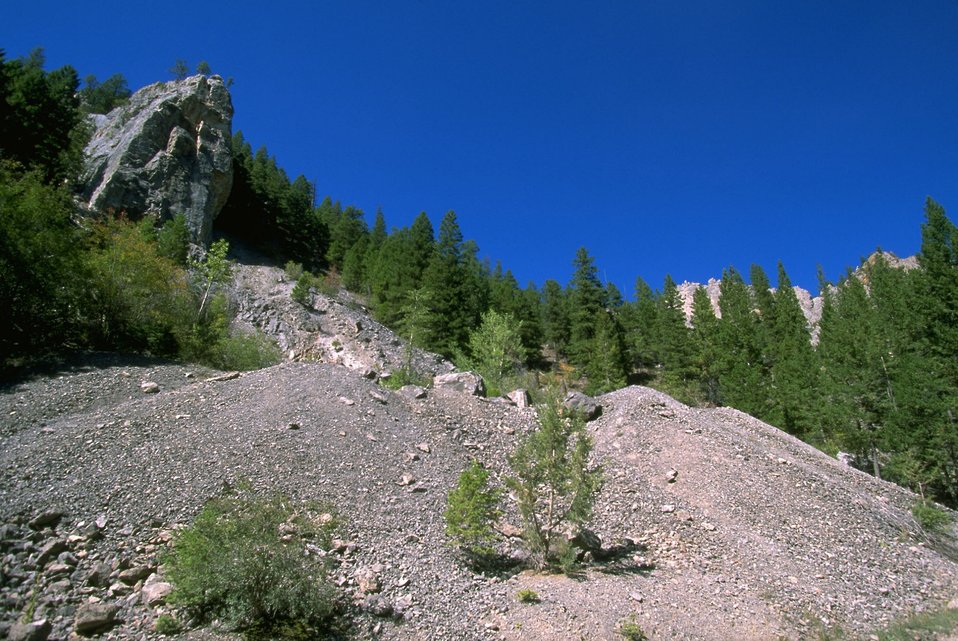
Rattler Gulch-Limestone Cliffs ACEC